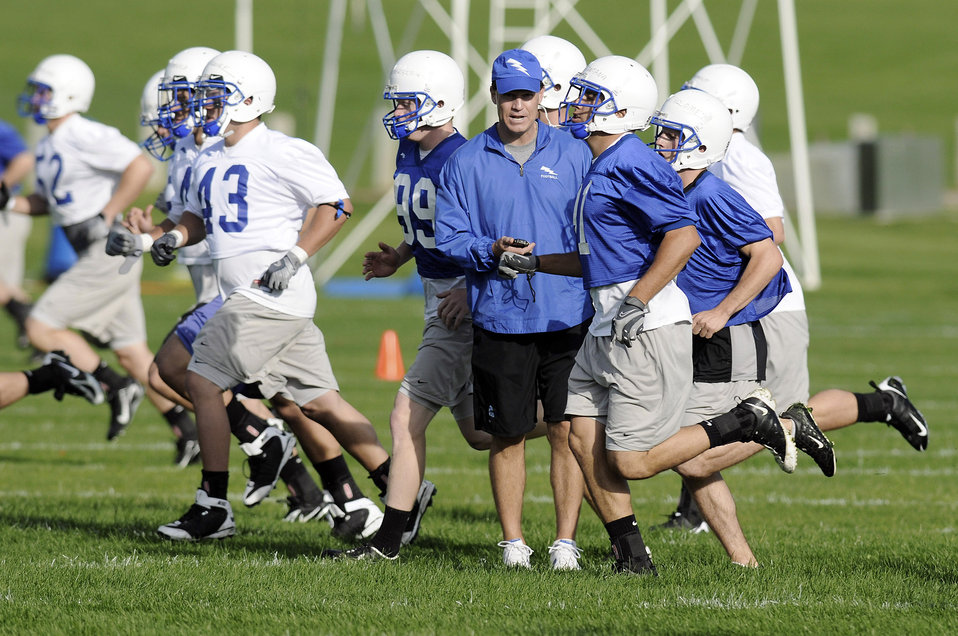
Academy football drills

Air Force Academy Falcons head coach Troy Calhoun times sprints during football practice Aug. 4 at the Academy practice field near Colorado Springs, Colo. The Falcons host the Nicholls State Colonels Sept. 5 in their home opener.